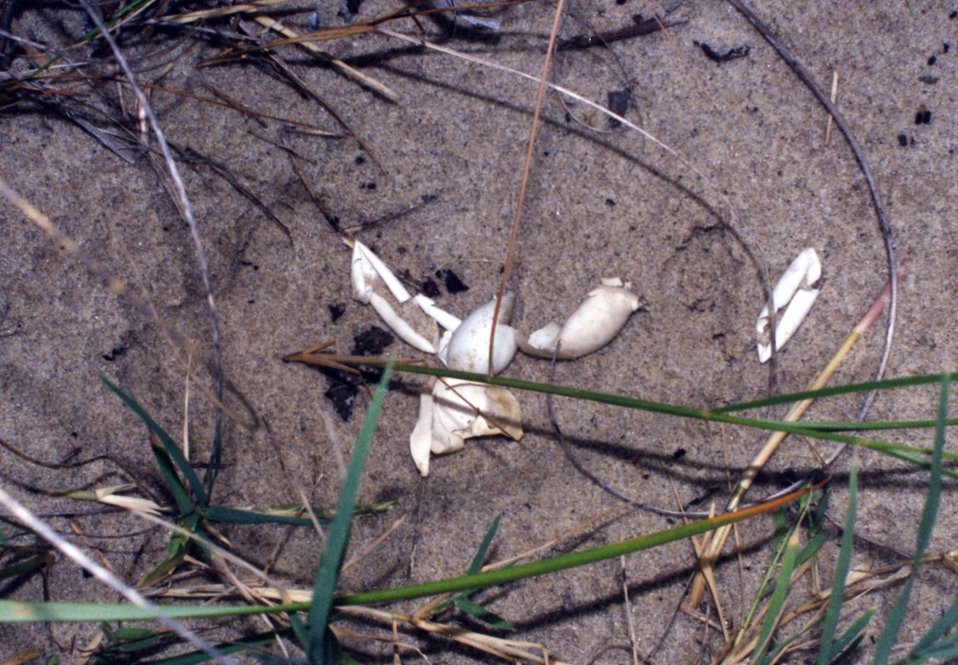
Diamondback terrapin eggs as they appear when successfully hatched.